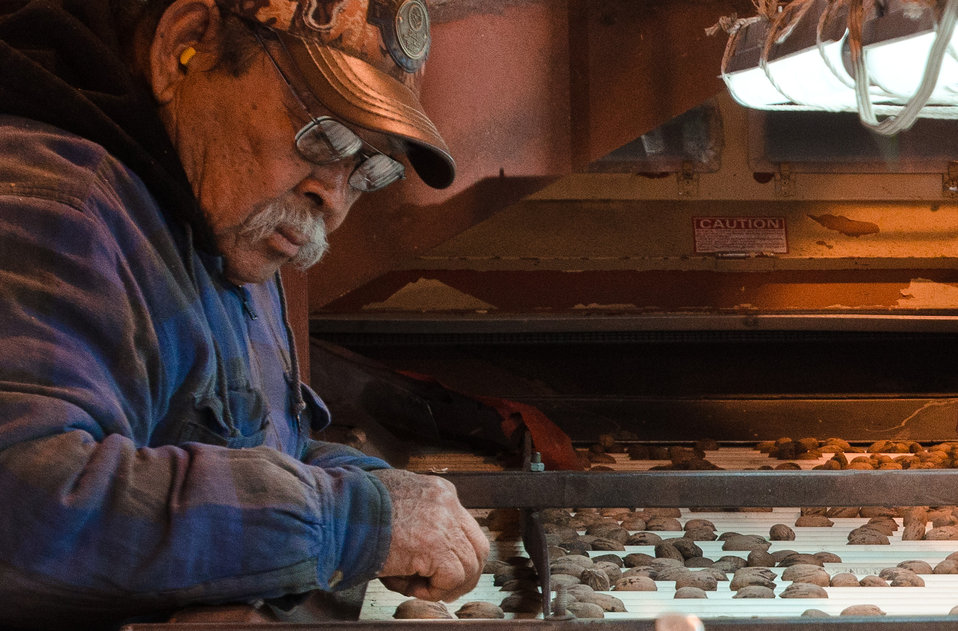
Teodoro Gamez uses his keen eyes and fast hands to sort out any pecans that are less than perfect from the last load of this season's harvest at Arrowhead Farms of Crystal City, TX, on Friday, December 9, 2011, owned by Mr. Akram Mohammad, a pecan farmer since 2005. The 719 acre farm with 10,000 trees, features some orchards with underground micro irrigation system that feeds water to the roots of 4,380 pecan trees on 146 acres. Mr. Mohammad said, “USDA (U.S. Department of Agriculture) was essential to my business and trees surviving the recent exceptional drought. The trees were stress free thanks to underground micro-irrigation. This is essential to the future growth of Texas agriculture and good for America.” U.S. Department of Agriculture’s (USDA) Environmental Quality Initiative Program (EQIP) awarded Mr. Mohammad a $130,000 grant in 2008. He provided $26,000 for the balance of the $156,000 total cost to install a 146-acre underground micro-irrigation for 4,380 trees.